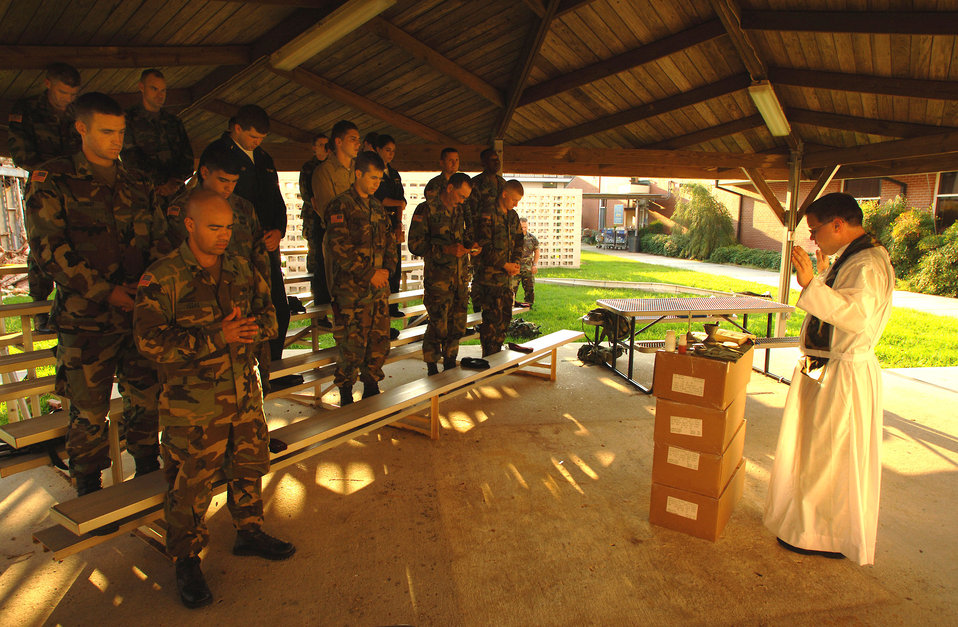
Keeping faith

NAVAL AIR STATION NEW ORLEANS, La. -- Air Force Chaplain (Major) Hayden Vavarek conducts service for joint servicemembers here Sept. 11. Department of Defense units are mobilized as part of Joint Task Force-Katrina to support the Federal Emergency Management Agency's disaster relief efforts in the Gulf Coast areas devastated by Hurricane Katrina. Chaplain Vavarek is assigned to the 315th Airlift Wing at Charleston Air Force Base, S.C.